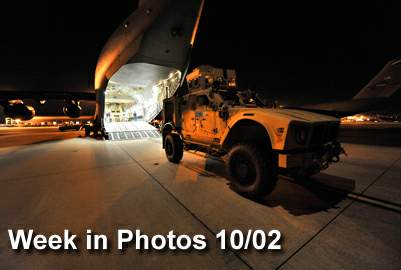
Air Force Week in Photos for Oct. 2 highlights photos from around the Air Force. In this photo by James M. Bowman, a new mine-resistant, ambush-protected armored all-terrain vehicle is loaded onto a C-17 Globemaster III bound for Afghanistan to support combat missions Sept. 30, 2009, at Charleston Air Force Base, S.C.